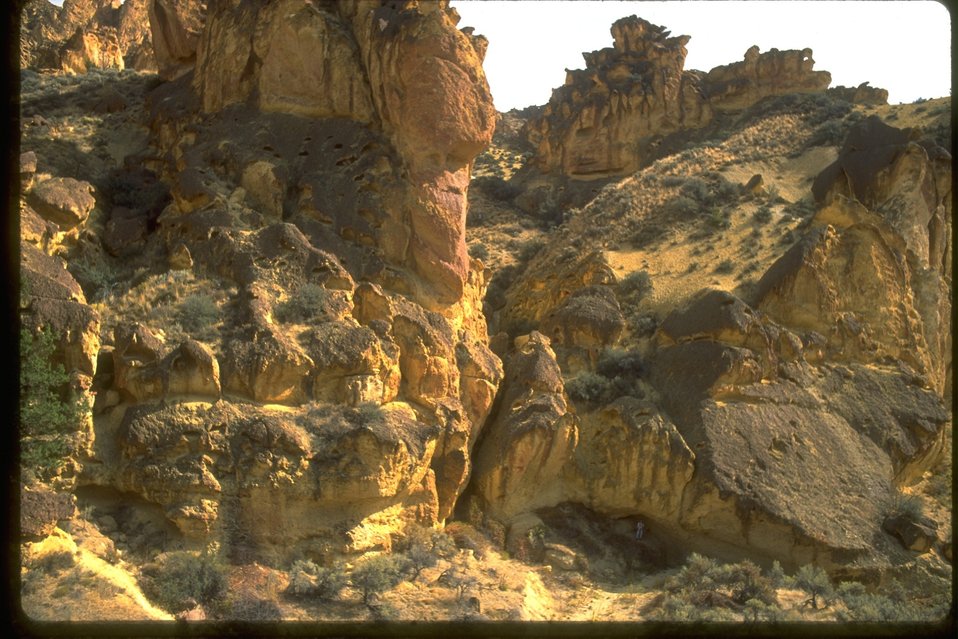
Leslie Gulch Series: close up of rock.